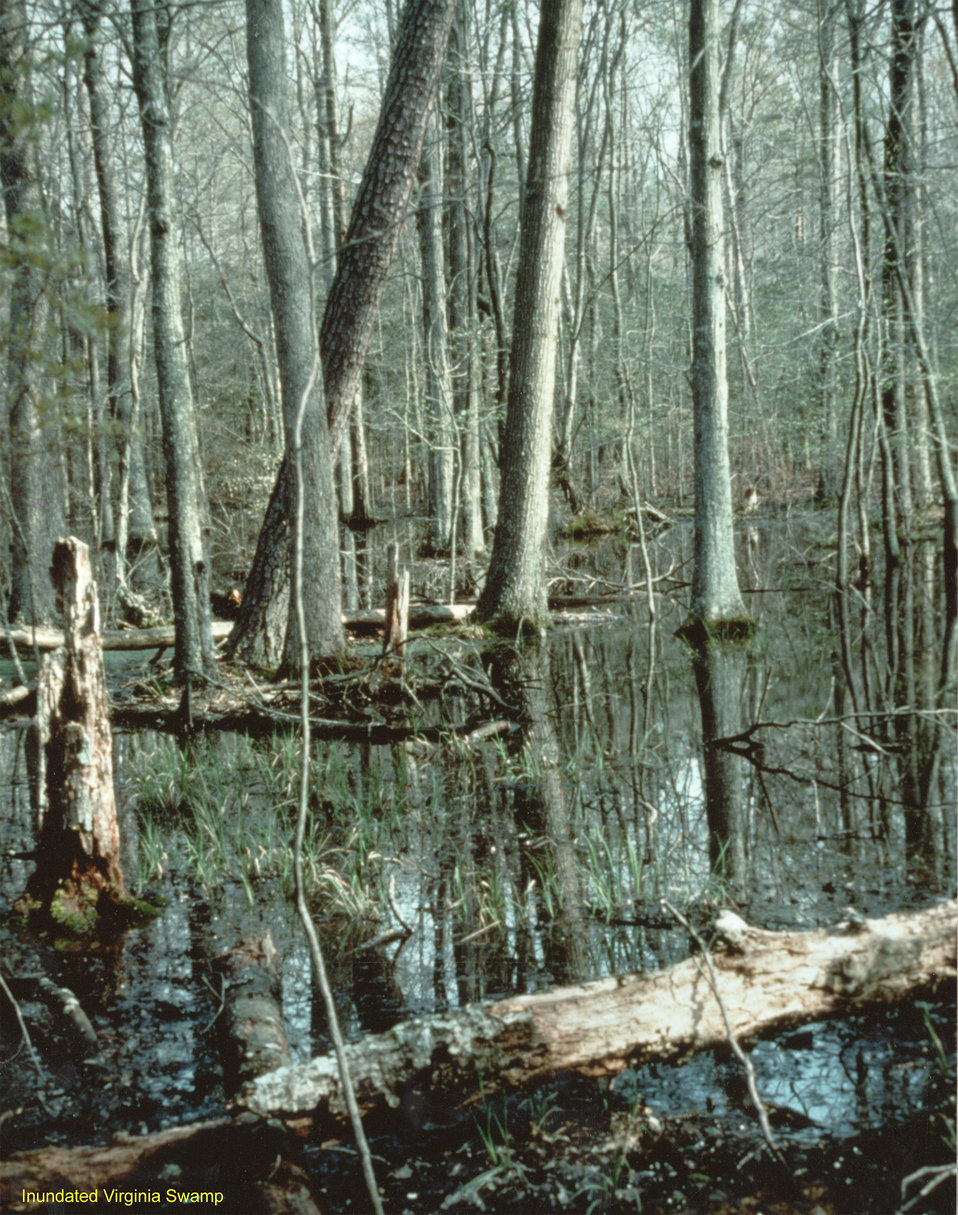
Inundated Virginia Swamp